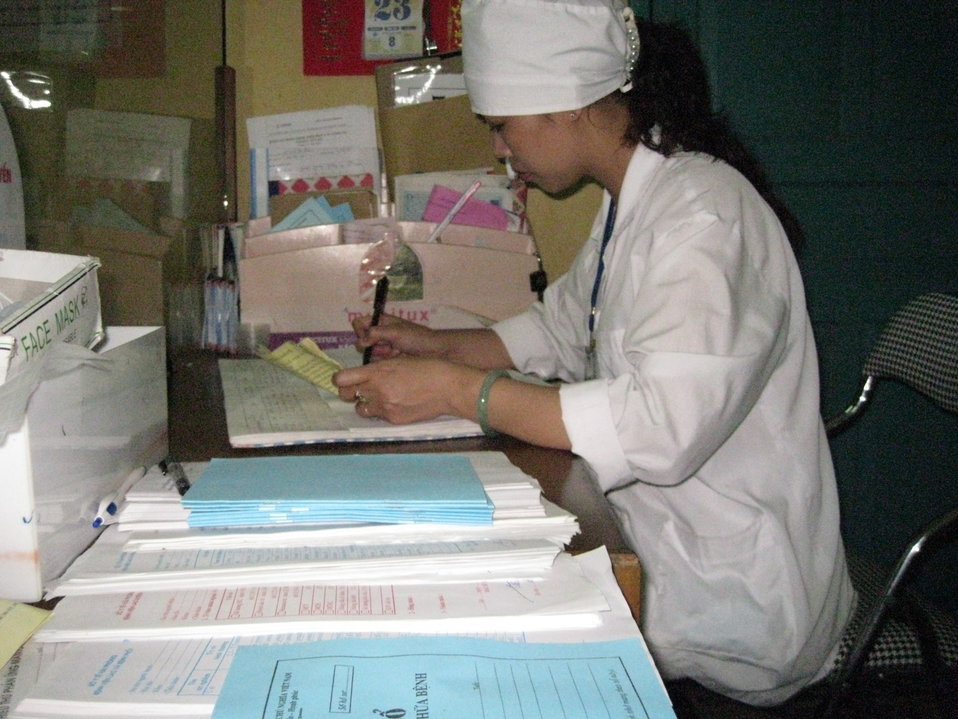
Pharmacies take part in TB referral services with the support of a USAID program